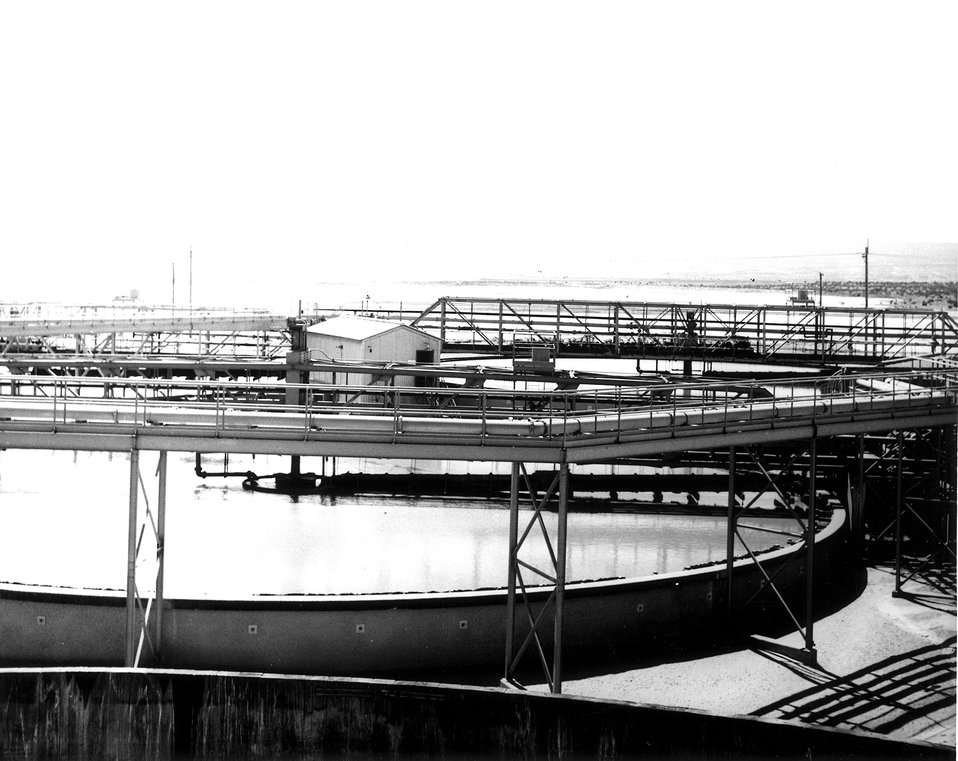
Detail of the superstructure of the thickener tanks and of the piping and agitation machines of a uranium mill, Grants, New Mexico. c. 1968